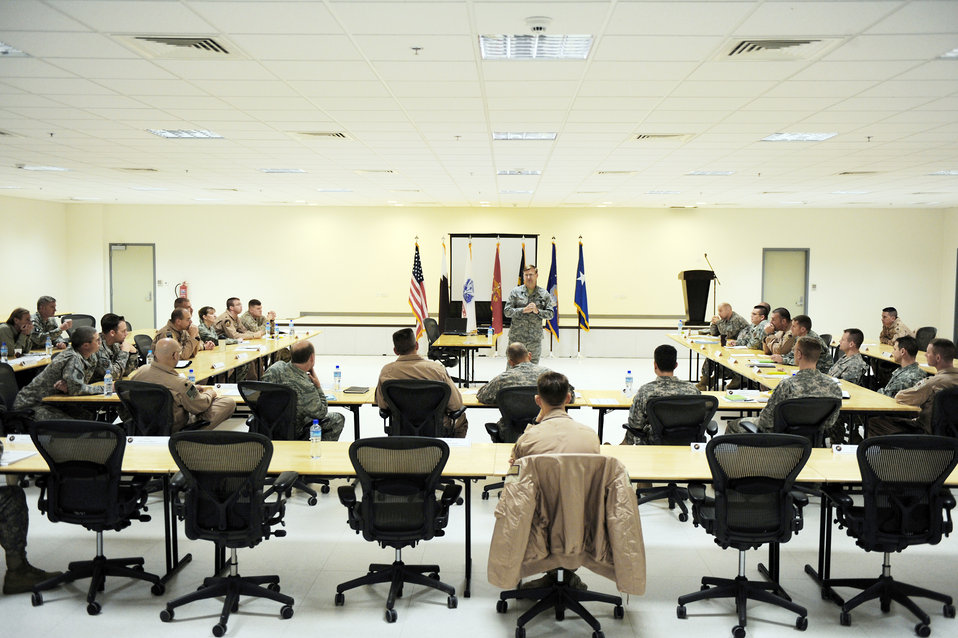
Operation Enduring Freedom

Maj. Gen. Stephen L. Hoog speaks with attendees of the Theater Space Conference, Feb. 8, 2010, at a base in Southwest Asia. General Hoog is deputy commander of both U.S. Air Forces Central Command and Combined Force Air Component commander and the vice commander of the 9th Air Expeditionary Task Force.